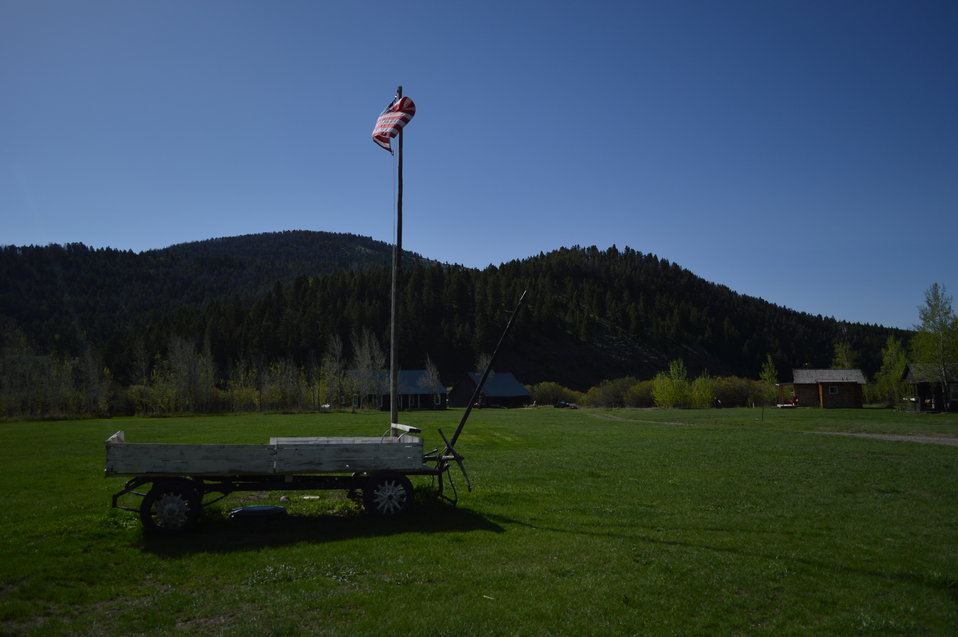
Regional Leadership Visit to Montana 2014